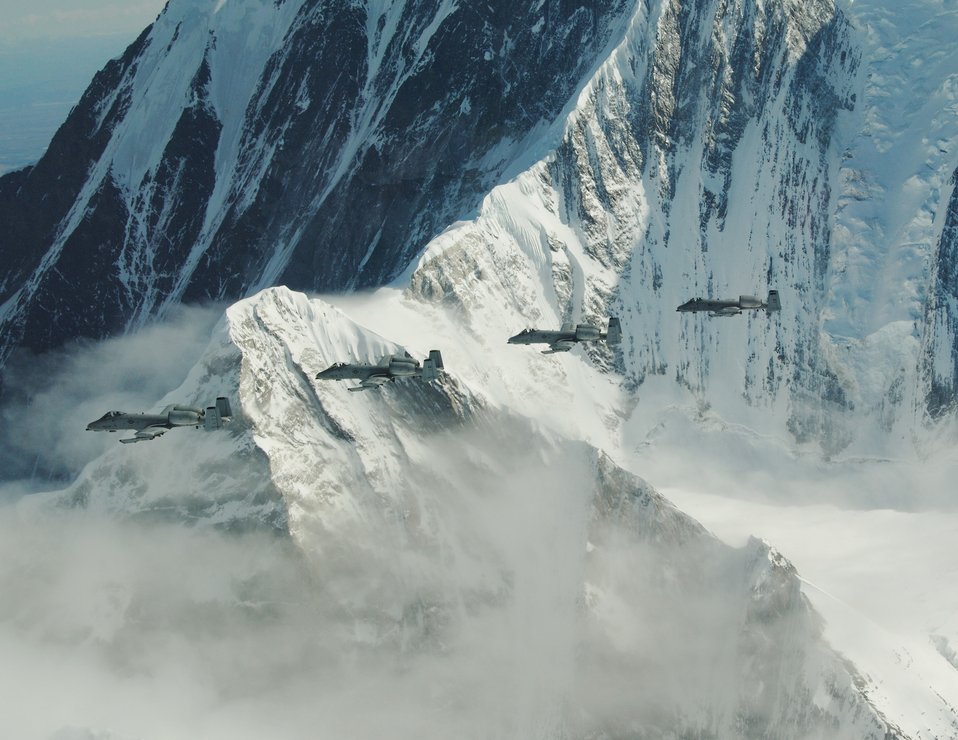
Thunder and lightning

A-10 Thunderbolt IIs fly over the Pacific Alaska Range Complex April 24 during live-fire training. The A-10s are from the 355th Fighter Squadron from Eielson Air Force Base, Alaska. Members from the 355th FS are tasked to provide mission ready A-10s and a search and rescue capability, in Alaska and deployed sites worldwide.